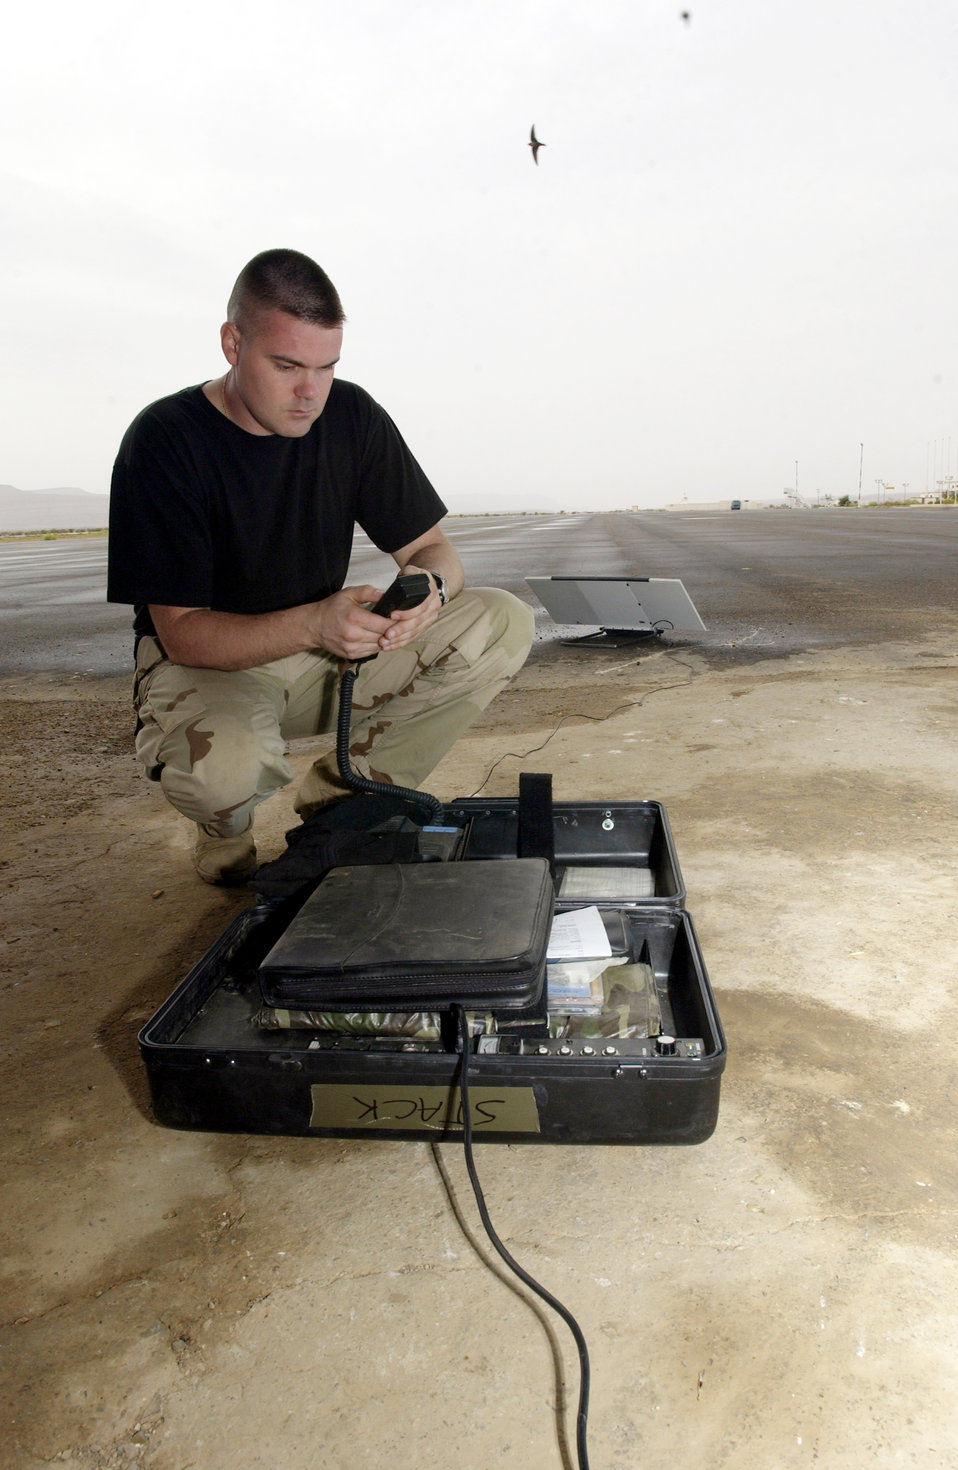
Out of Africa

ATAR AIRPORT, Mauritania -- Staff Sgt. Sean Stackhouse sets up an international maritime satellite terminal for his deployed mission-support team. The team pulled Soldiers from Africa who were working on the Pan Sahel Initiative. The Soldiers trained the African military in force protection, border patrol and anti-terrorism tactics. Sergeant Stackhouse is a communications specialist from the 86th Contingency Response Group.